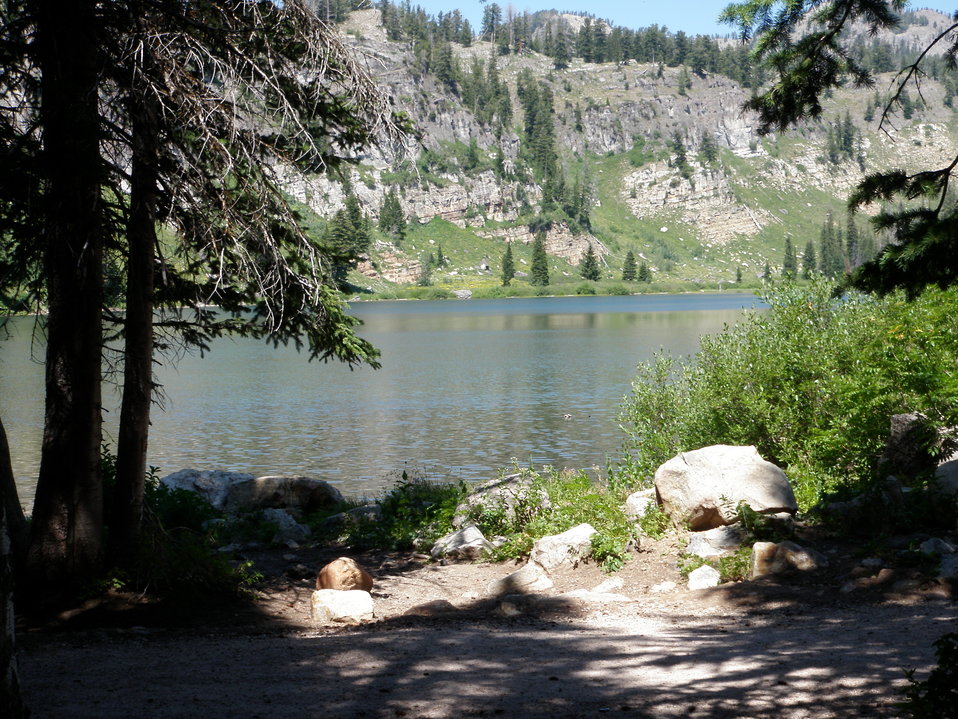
Tony Grove Lake, Utah